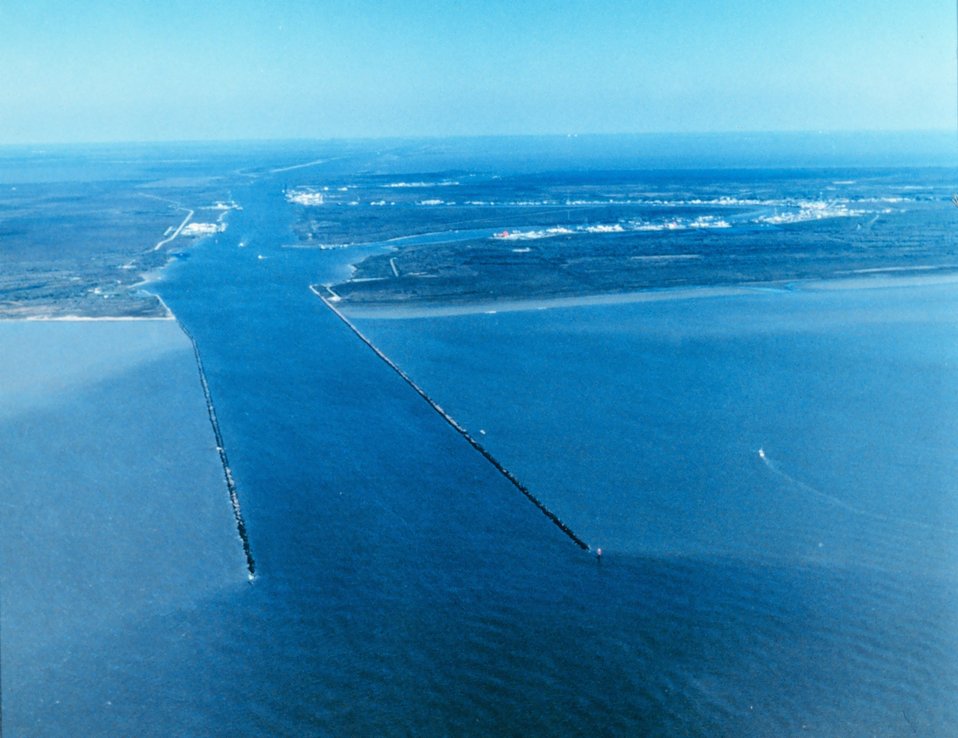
2948 North Latitude 9320 West Longitude.